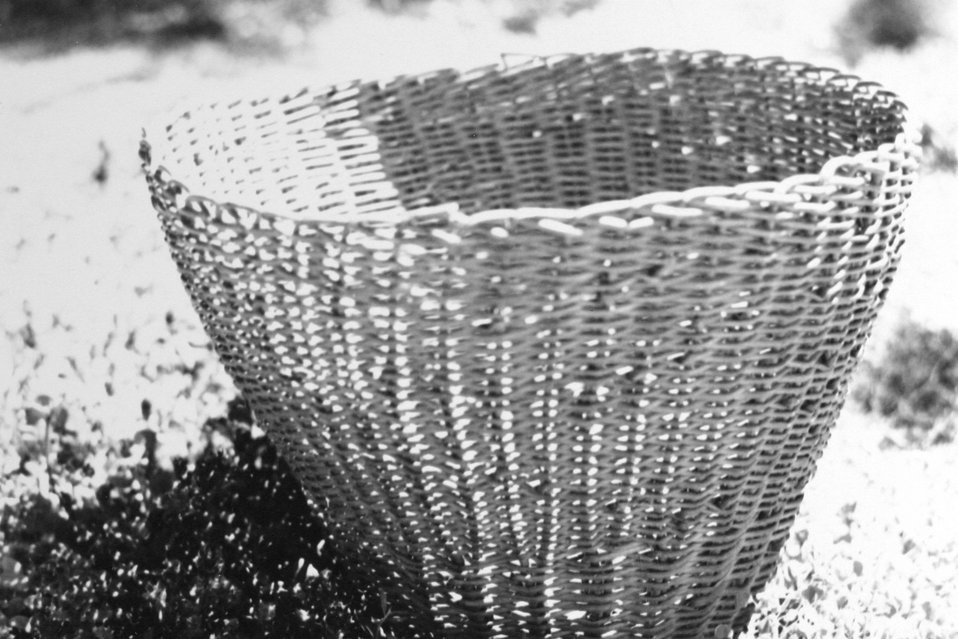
A basket made by Adeline Billings.